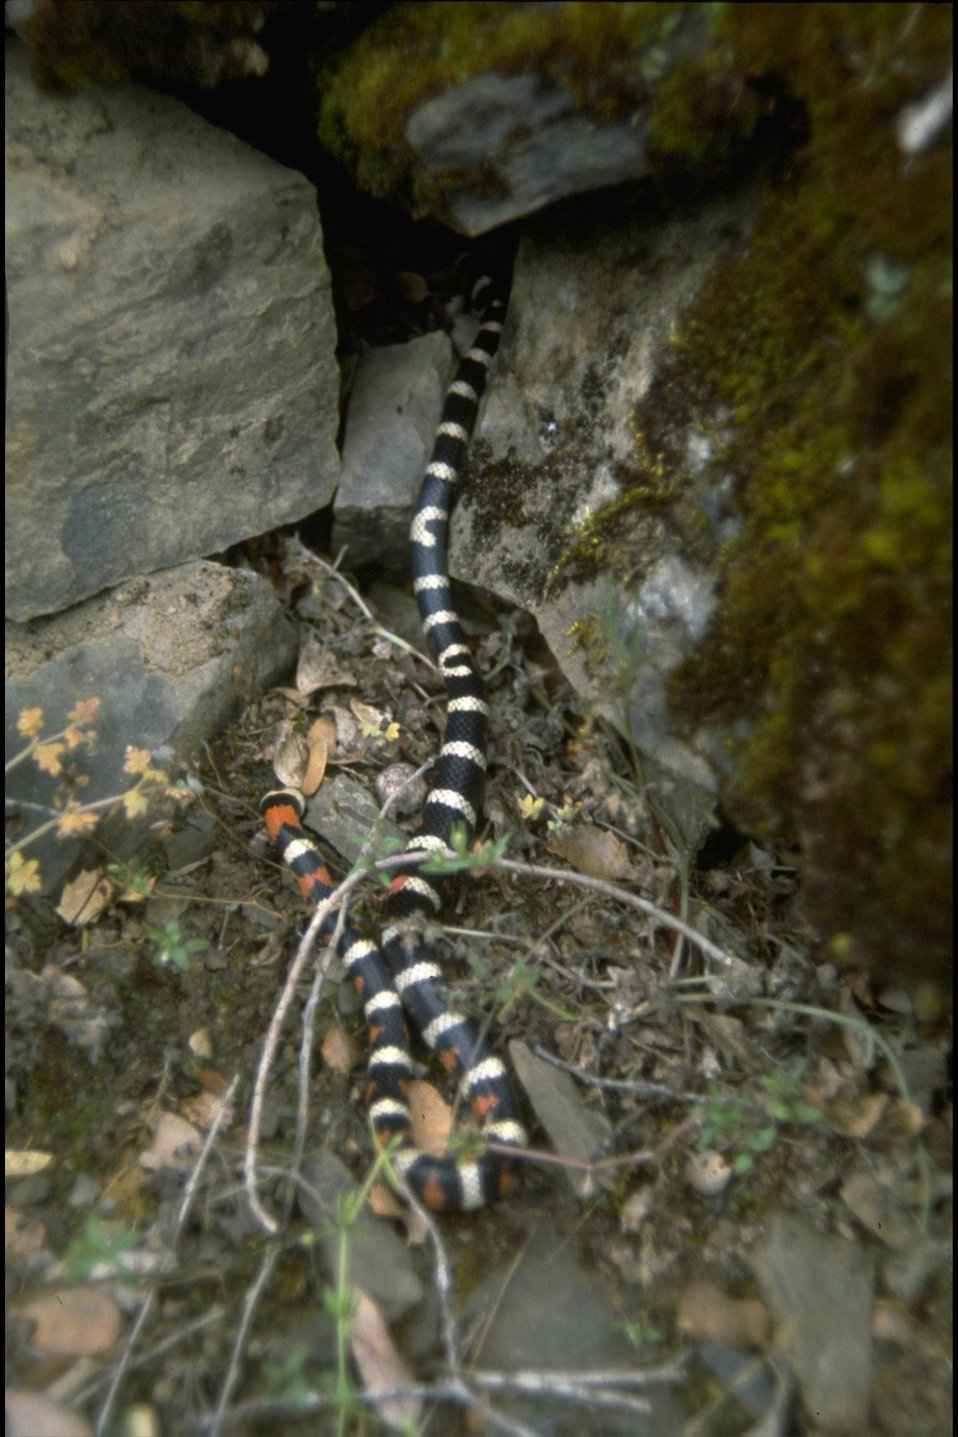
Rogue River - King Snake.